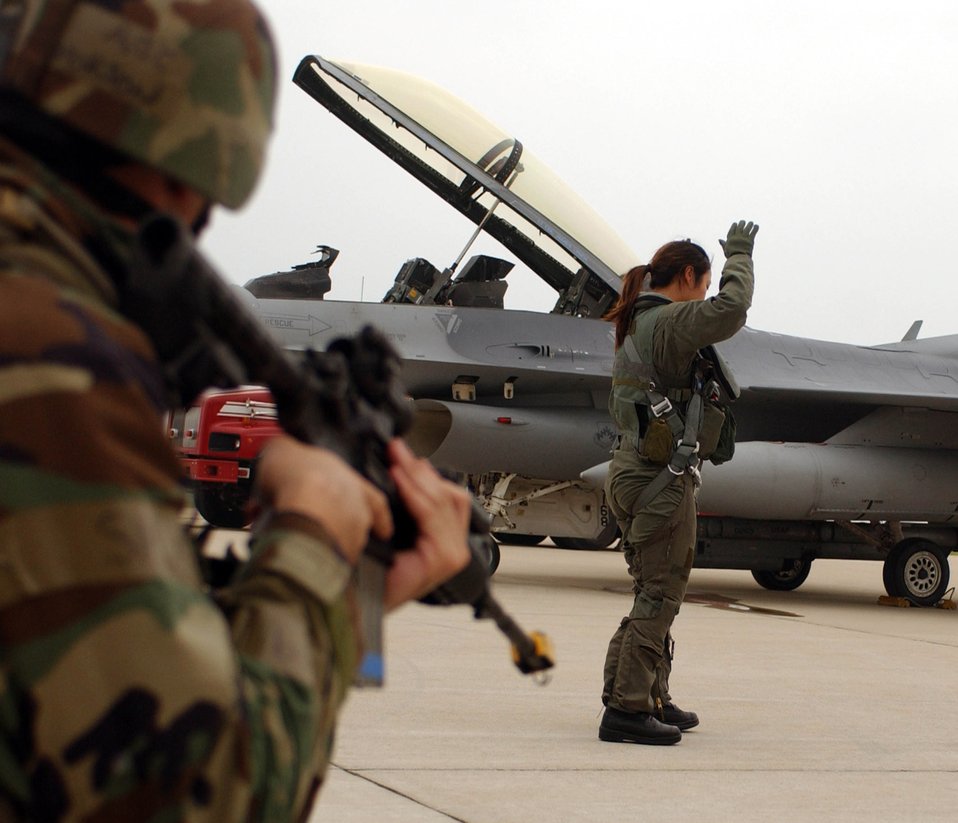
Maintaining credible deterrence

Airman 1st Class Erik Halvorson watches over an unidentified individual on the flightline July 26 at Kunsan Air Base, South Korea. The scenario is part of the week-long 7th Air Force Peninsula-Wide Combat Employment Readiness Exercise taking place July 23 through 27. The exercise tests the ability of Air Force fighter wings to properly defend South Korea through the use of airpower. Airman Halvorson is assigned to the 8th Security Forces Squadron.